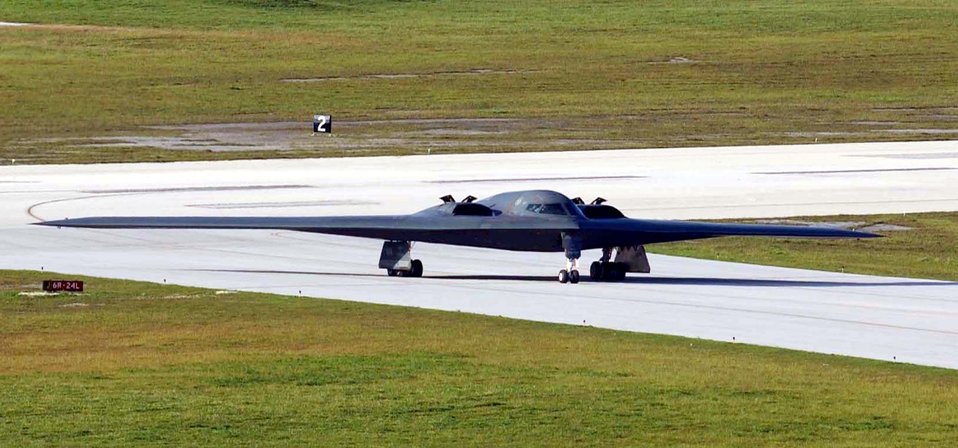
Exercise for the spirit

ANDERSEN AIR FORCE BASE, Guam -- A B-2 Spirit taxis onto the flightline here in support of exercise Coronet Bugle 49 on July 15. The B-2 is deployed from Whiteman Air Force Base, Mo.